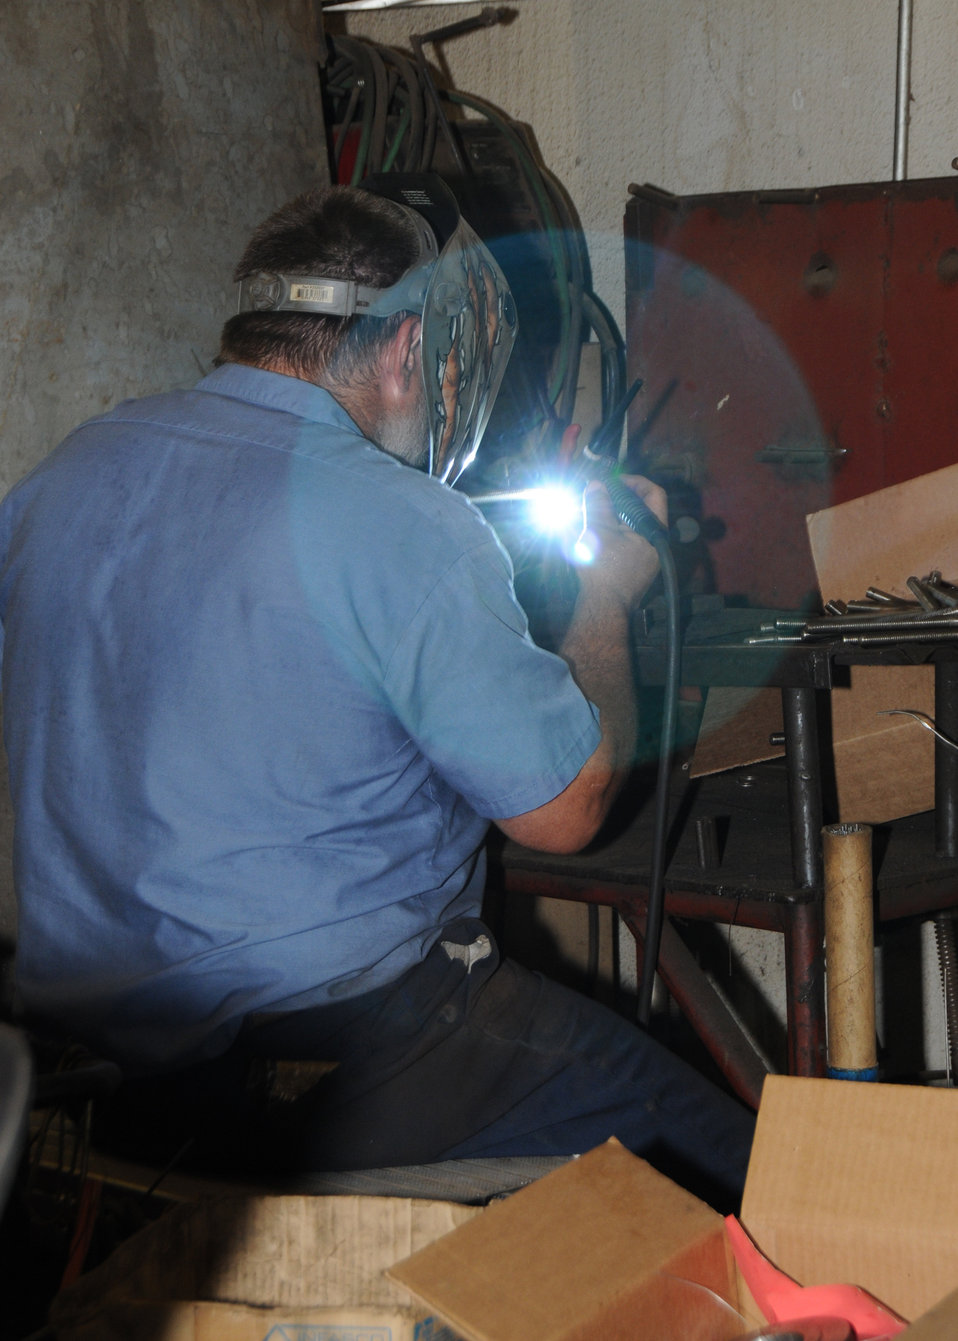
ARRA funding ($399,999.00) is being used through a Rural Business loan to the Johnston County Industrial Authority to expand the business park. A new 6,000 sq. ft. facility will be built and leased to an existing small business that wishes to expand its capacity to building trailers in Tishomingo, Oklahoma.